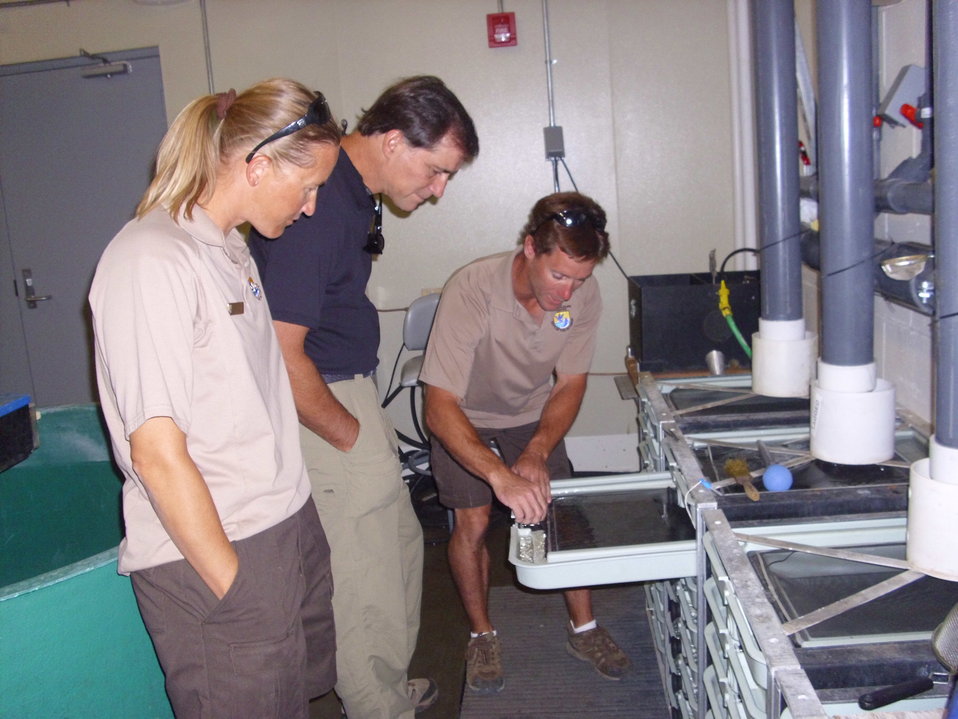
Dan at the Jackson National Fish Hatchery

In the lab getting briefed on the latest work.